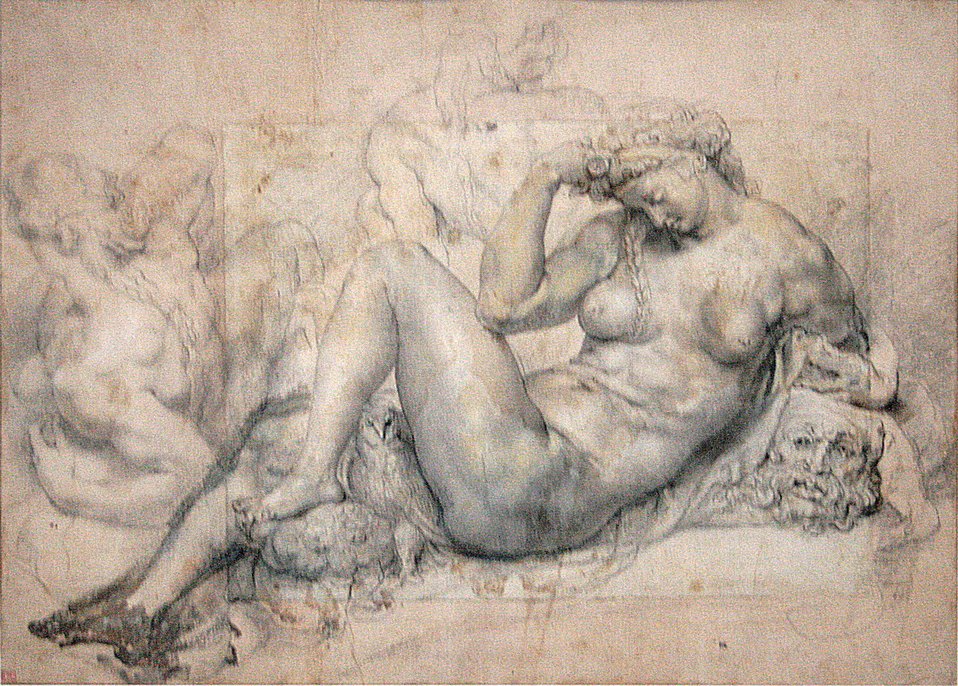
0 La Nuit - Pierre Paul Rubens d'après Michel-Ange